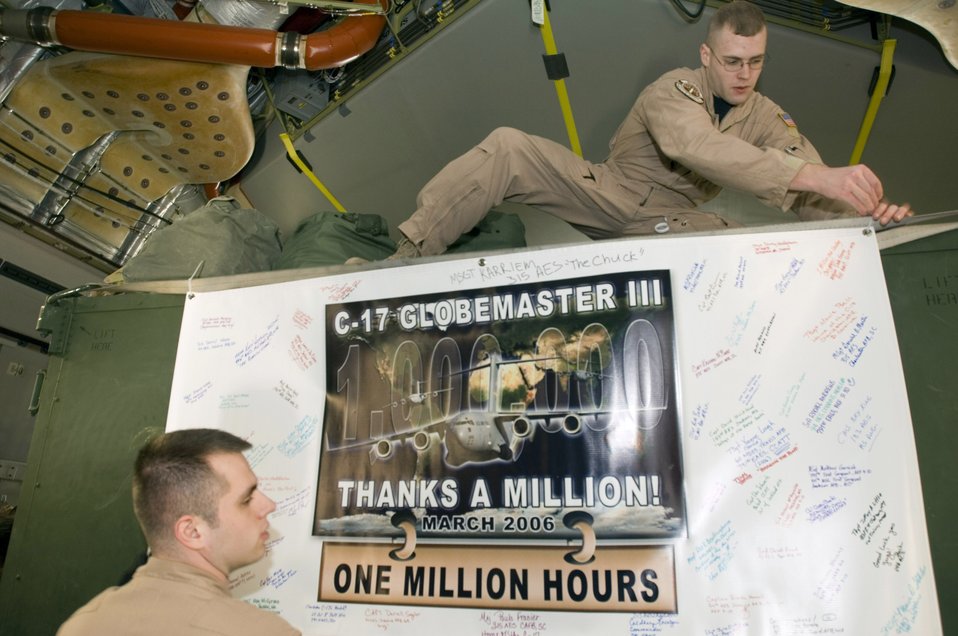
C-17 surpasses its 1 millionth flying hour

Senior Airmen Christian Adams, above, and Daniel Wood hang a sign inside a C-17 Globemaster III at Ramstein Air Base, Germany, on Sunday, March 19, 2006. The Mississippi Air National Guard transport delivered cargo to Al Asad, Iraq, and returned from Balad Air Base, Iraq, as an aeromedical mission that put the air transport past the 1 millionth hour of flight time. The Airmen are medical technicians on temporary duty to Ramstein's 791st Expeditionary Aeromedical Evacuation Squadron.